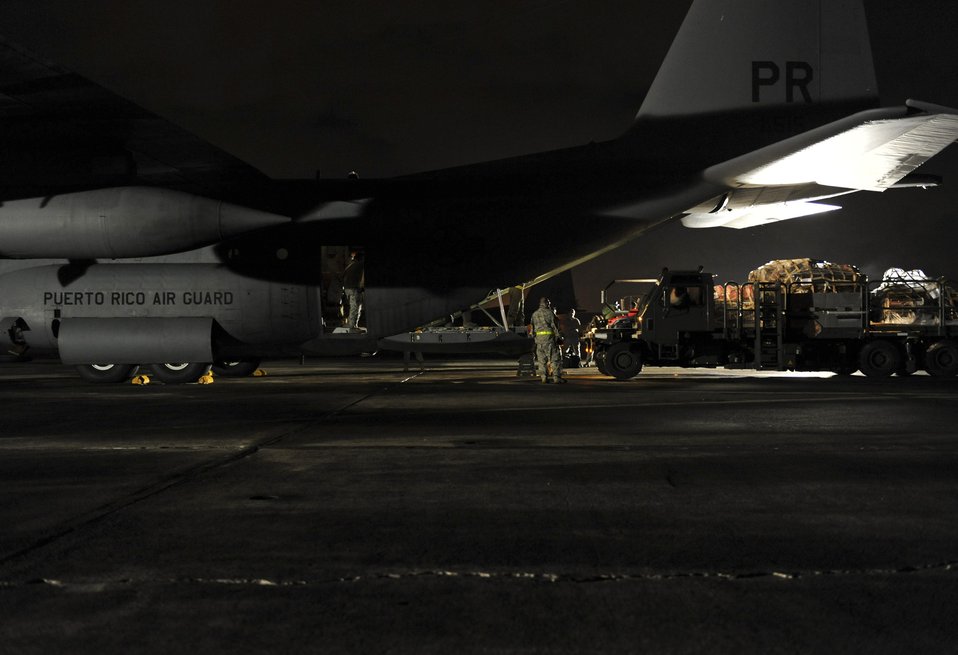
Haiti night mission

Airmen from the Puerto Rico Air National Guard's 156th Airlift Wing load cargo onto a C-130E Hercules aircraft Jan. 16, 2010, to support the relief effort in Haiti in the aftermath of a devastating earthquake.